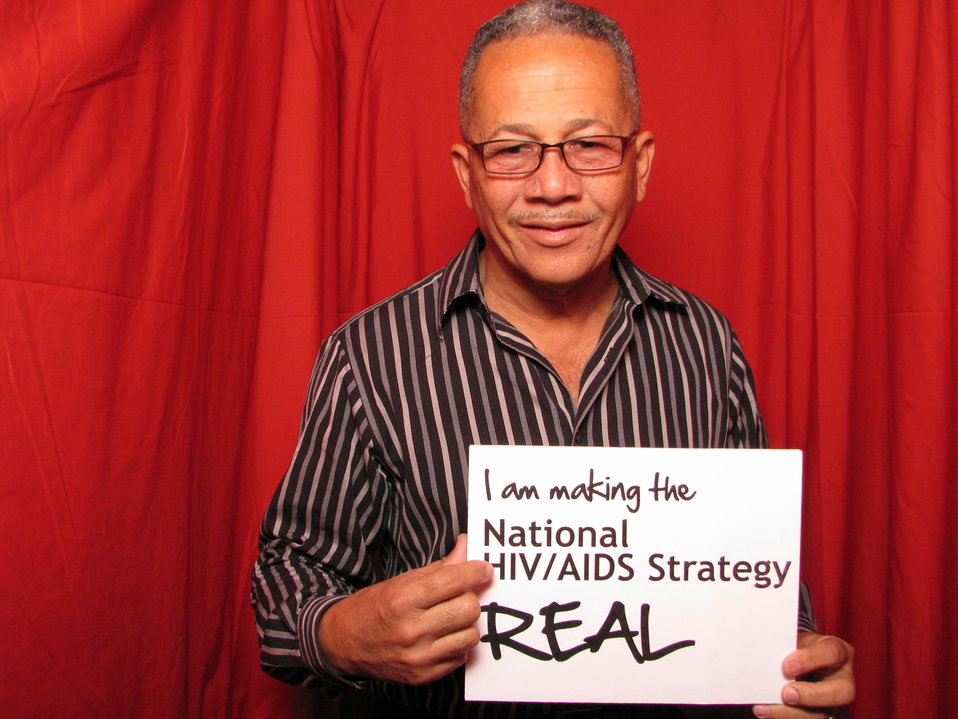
I am making the National HIV/AIDS Strategy REAL

From the AIDS.gov photo booth at the U.S. Conference on AIDS, September 2010 (Orlando, FL).